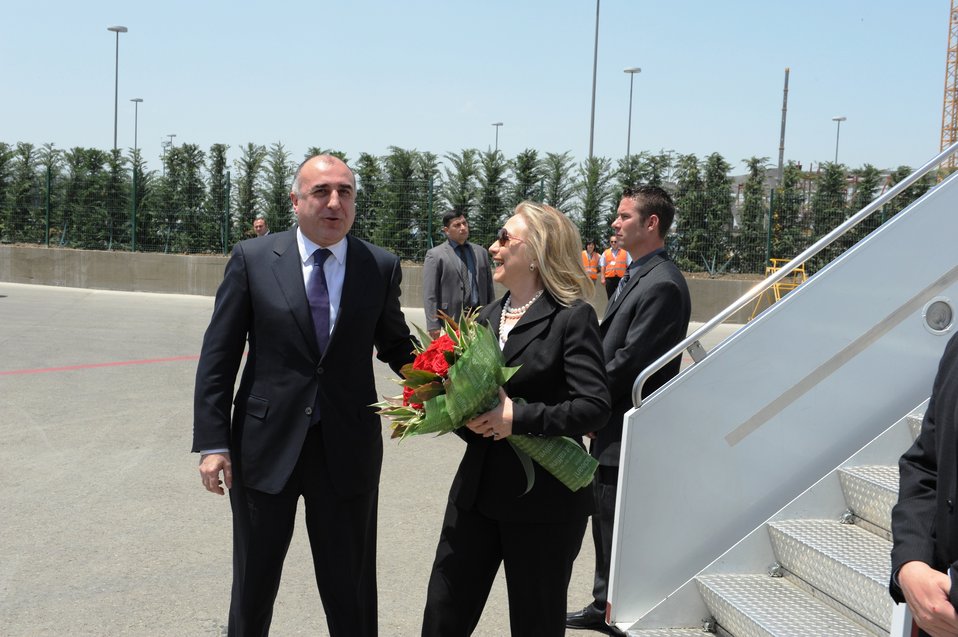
Secretary Clinton Is Greeted By Azerbaijani Foreign Minister Mammadyarov

U.S. Secretary of State Hillary Rodham Clinton is greeted by Azerbaijani Foreign Minister Elmar Mammadyarov upon her arrival in Baku, Azerbaijan, on June 6, 2012.